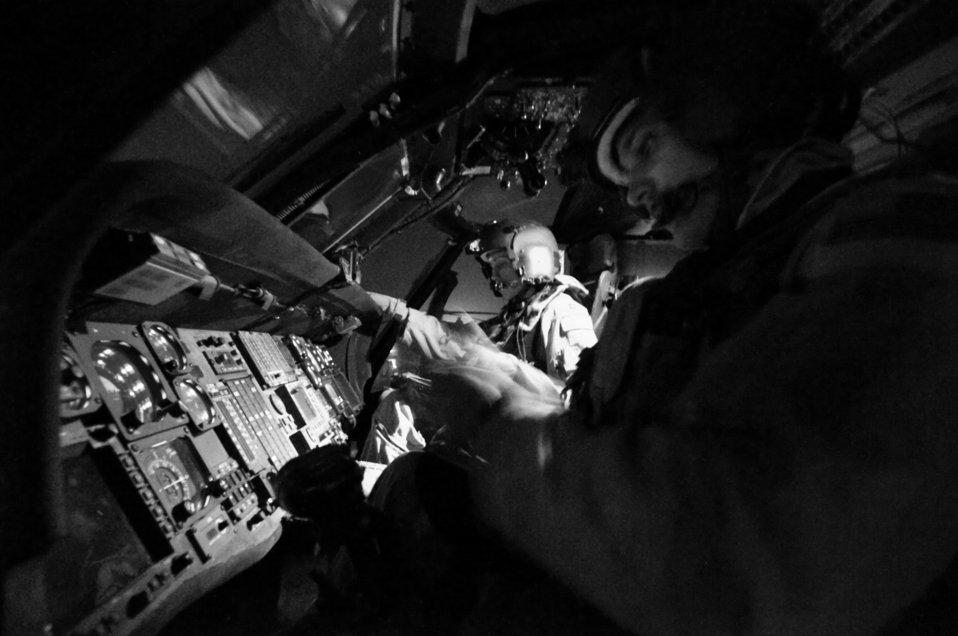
Nighttime operations

Capt. Jennifer Aupke (left) and 1st Lt. Thaddeus Ronnau double-check their gear and instrument readings July 17 at Bagram Air Base, Afghanistan. The HH-60G Pave Hawk helicopter features an upgraded communications and navigation suite that includes integrated inertial navigation/global positioning/Doppler navigation systems, satellite communications, secure voice, and Have Quick communications. Captain Aupke is an aircraft commander and flight lead, and Lieutenant Ronnau is a co-pilot. Both are assigned to the 33rd Expeditionary Rescue Squadron deployed from Kadena AB, Japan.